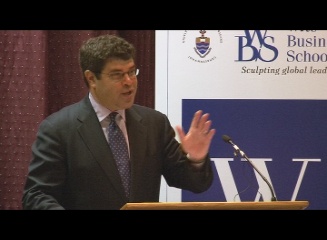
Deputy Secretary Neal Wolin’s trip to Africa 2009

At the University of the Witwatersrand’s Business School in Johannesburg, Deputy Secretary Wolin delivers a speech on the path from global crisis to global recovery and the ways in which partnerships between the U.S. and sub-Saharan Africa can promote long-term growth on the continent.